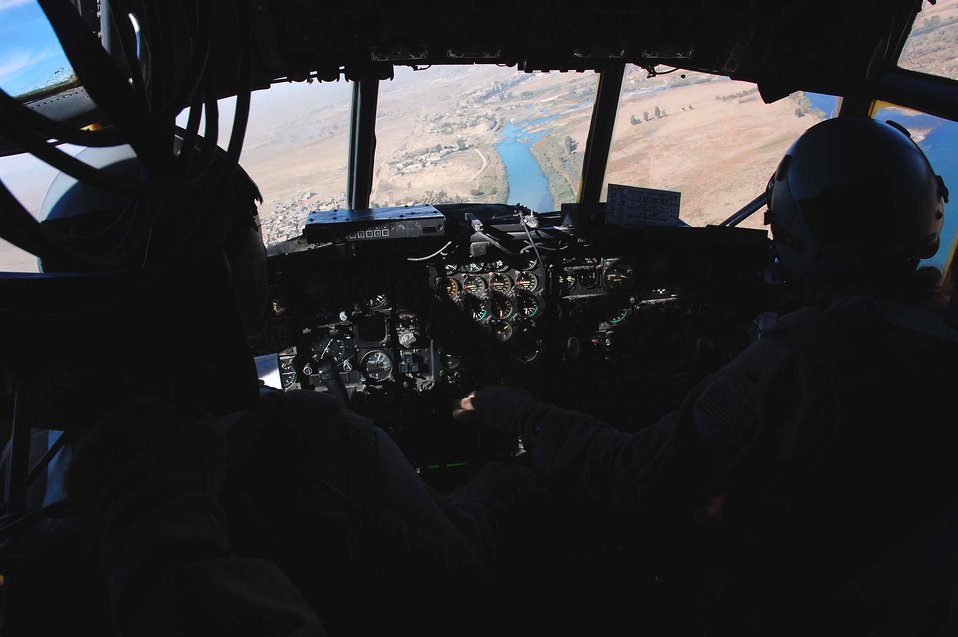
44-year old C-130 flies final combat mission, ends service

Col. Brian O'Connor (left) and 1st Lt. Justine Perlbert fly C-130 Hercules, tail number 63-7865, near Mosul, Iraq, Nov. 13. The aircraft had just flown its last combat mission and will be flown to Davis-Monthan Air Force Base, Ariz., where it will be laid to rest at the